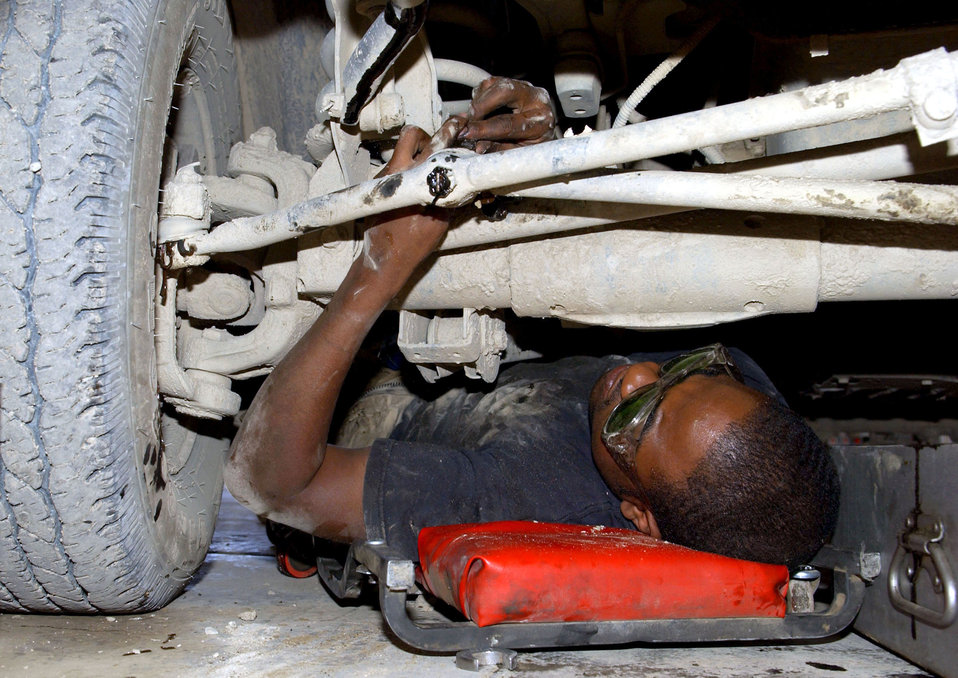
Laying down on the job

BAGRAM AIR BASE, Afghanistan -- Senior Airman Ronald Blake greases the undercarriage of an Air Force vehicle. Besides working on general-purpose vehicles, Airman Blake helps maintain six aircraft refueling vehicles assigned here. He is a vehicle maintainer with the 455th Expeditionary Operations Group and is deployed from Keesler Air Force Base, Miss.